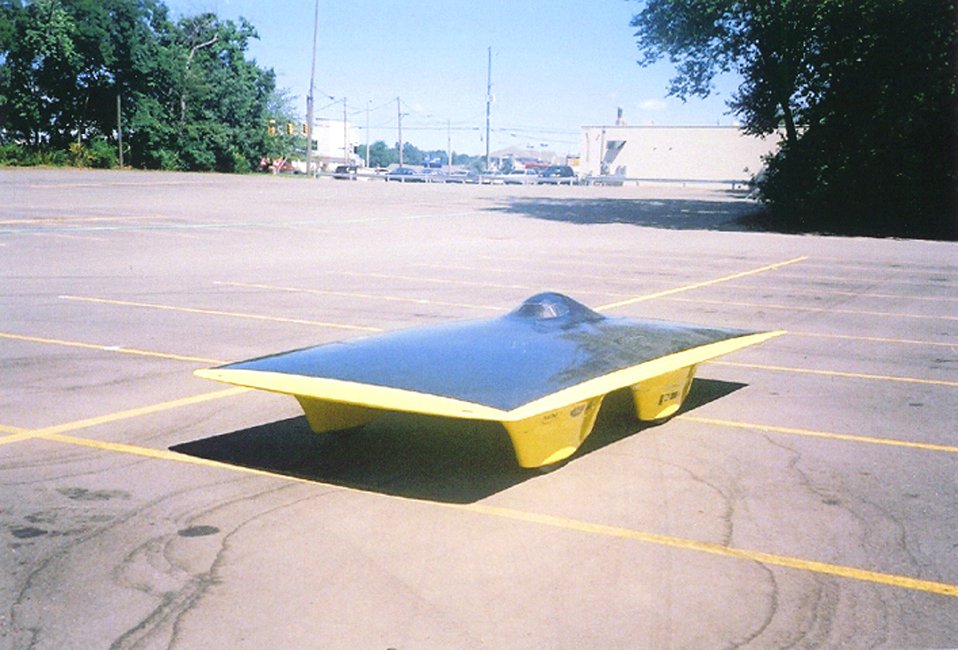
UNIVERSITY OF MICHIGAN ENTRY TOOK FIRST PLACE IN THE AMERICAN SOLAR CAR CHALLENGE 2001.

THE AMERICAN SOLAR CHALLENGE (SUNRAYCE) 2001, THE LONGEST SOLAR CAR RACE IN THE WORLD, IS A BIENNIAL EDUCATIONAL SPORTING EVENT IN WHICH UNIVERSITY TEAMS, COMPANIES, AND CLUBS FROM AROUND THE WORLD COMPETE TO BUILD AND RACE SOLAR POWERED CARS ACROSS THE UNITED STATES. THIS YEAR THE RACE BEGAN IN CHICAGO, ILLINOIS ON JULY 15, 2001 AND WAS COMPLETED ON JULY 25, 2001 IN CLAREMONT, CALIFORNIA, TRAVELING ALL ALONG OLD ROUTE 66.